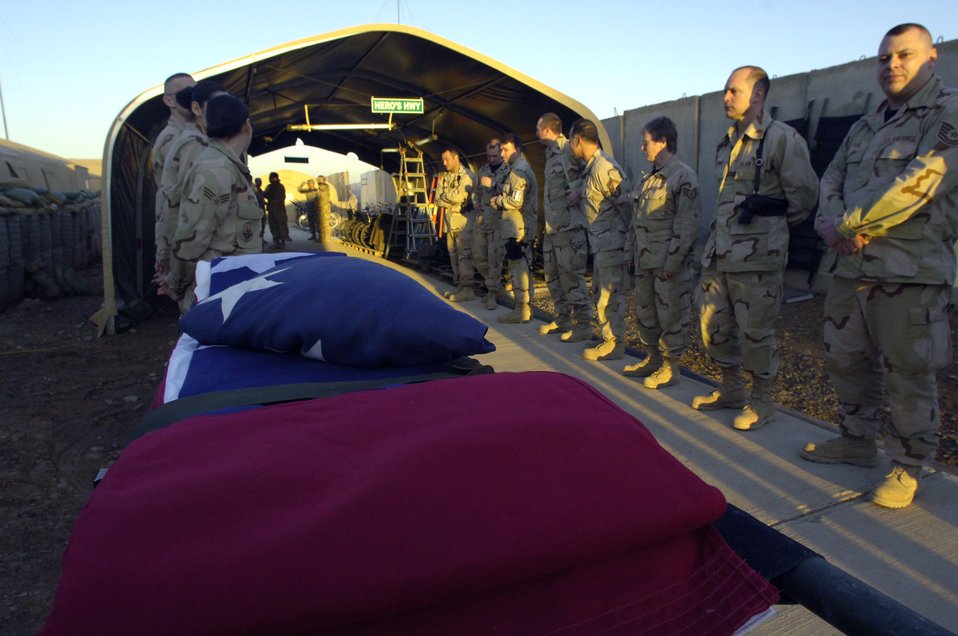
Hero's Highway begins in Iraq

Airmen deployed to the 332nd Air Expeditionary Wing unfold an American flag at the Hero's Highway Ceremony Jan. 22 at Balad Air Base, Iraq. The flag is posted on the inner roof a tent so injured troops can look up and know they are in an American area when brought in on litters seeking medical treatment. The medical group raised injured troops' survival rate to 98 percent.